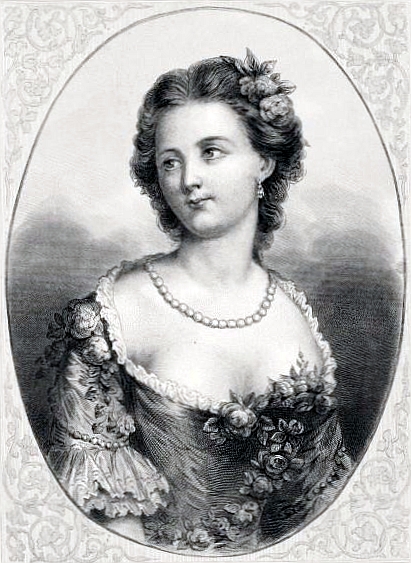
Marie-Anne de Camargo after Nicolas Lancret